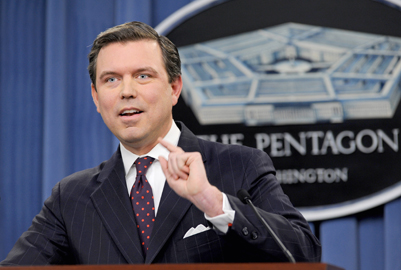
'Don't Ask' report

Pentagon press secretary Geoff Morrell discusses the possible repeal of the